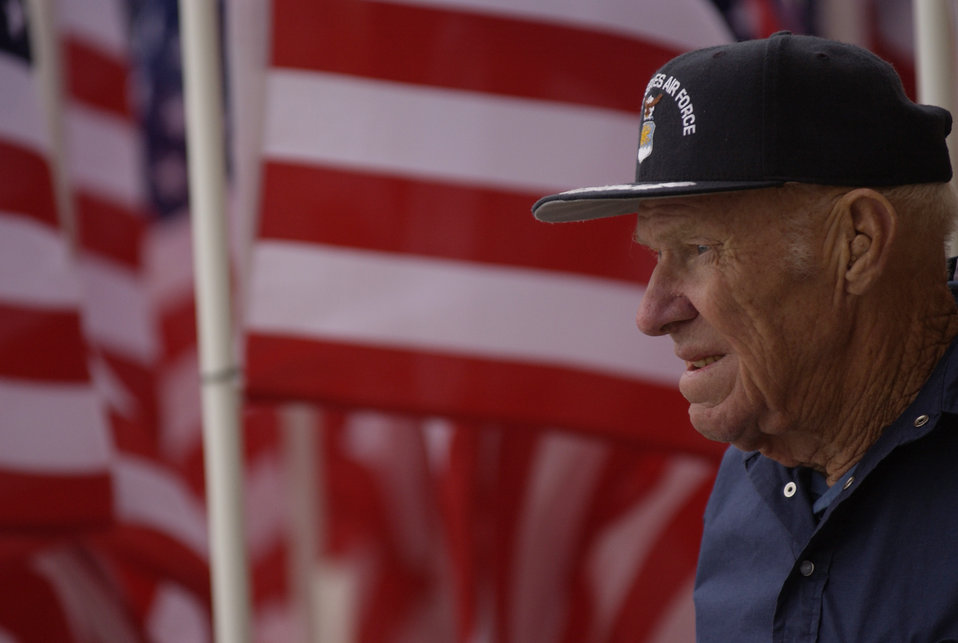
Reflection look

Retired Air Force Lt. Col. Richard Rose checks out the action during Aviation Nation 2006, Nov 11 at Nellis Air Force Base, Nev. It is the premier air show of the Air Force and one of the largest aviation events in North America. The show was held Nov. 11 and 12.